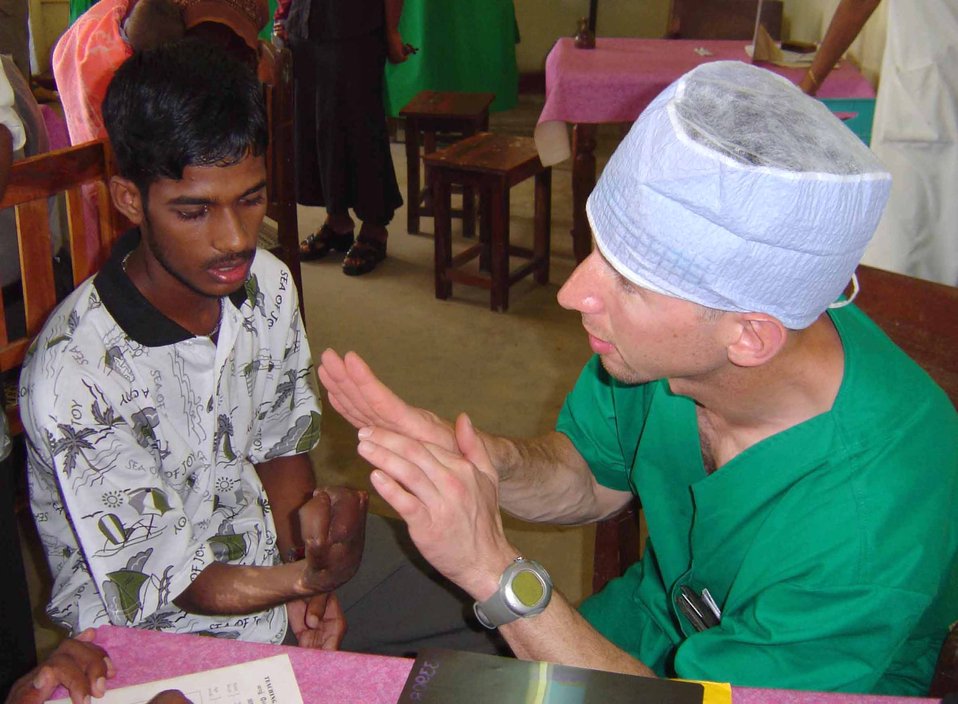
BRAVA team

JAFFNA, Sri Lanka -- Army Maj. (Dr.) John Tis explains to a young Sri Lankan man the potential outcome of an operation to surgically separate his thumb from the rest of his hand. The scar tissue growth which has fused his fingers together was caused by a land-mine blast near here. Dr. Tis is a pediatric orthopedic surgeon with the 135th Field Surgical Team in Yongsan Army Garrison, South Korea. He is here as part of a humanitarian surgical training mission, which continues through May 2.